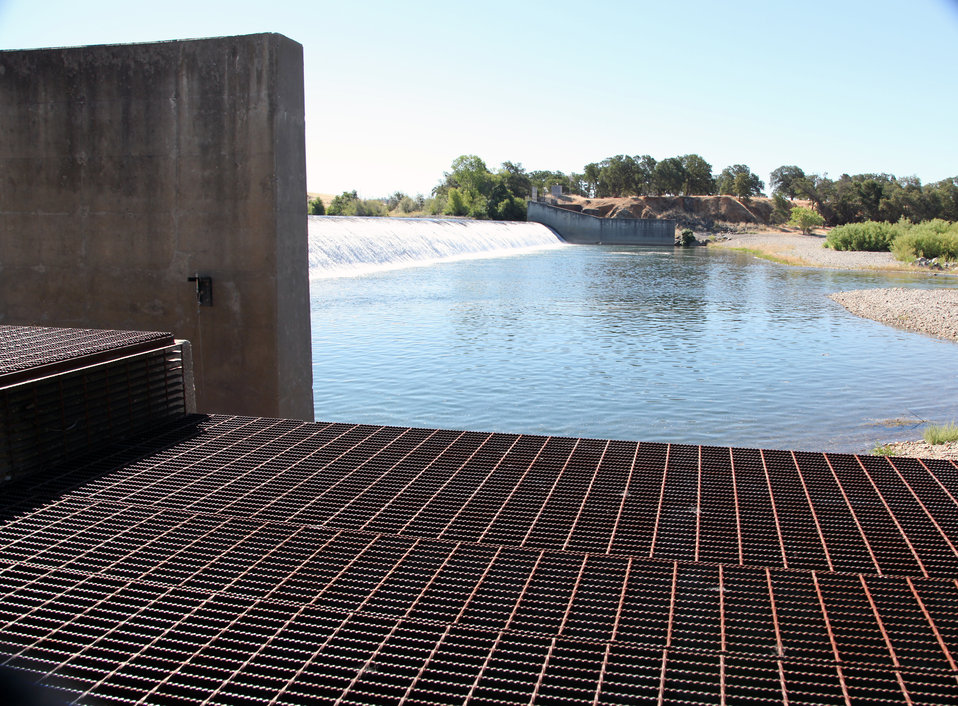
Corps reconnaissance team tours Yuba River

Gratings in foreground cover one set of fish ladders at Daguerre Point Dam. Members of the Sacramento District team assessing possible federal projects for ecosystem restoration along Northern California's Yuba River reviewed the water’s route from Daguerre Point Dam up to Downieville on June 18, 2014. The USACE team was accompanied by members of the Yuba County Water Agency and several YCWA consultants in this initial trip to gather data on the overall state of the Yuba and water facilities along the route.